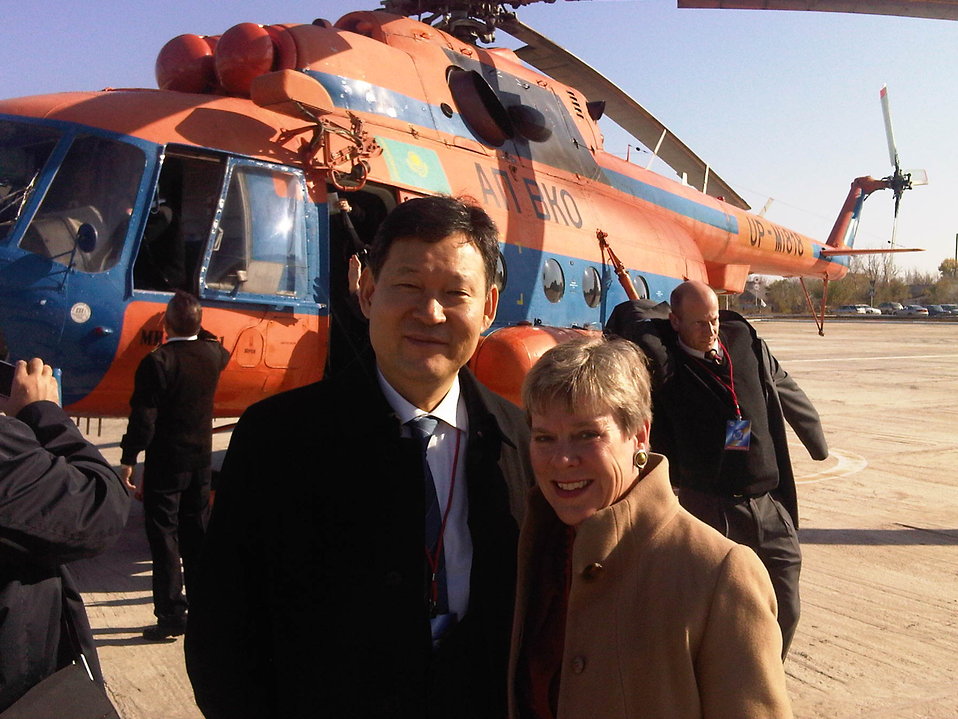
Assistant Secretary Gottemoeller and Kazakhstan Deputy Foreign Minister Umarov Arrive at Semipalatinsk Test Site

Assistant Secretary of State for Arms Control, Verification and Compliance Rose Gottemoeller and Kazakhstan Deputy Foreign Minister Umarov arrive at Semipalatinsk test site in Kazakhstan on October 13, 2011.